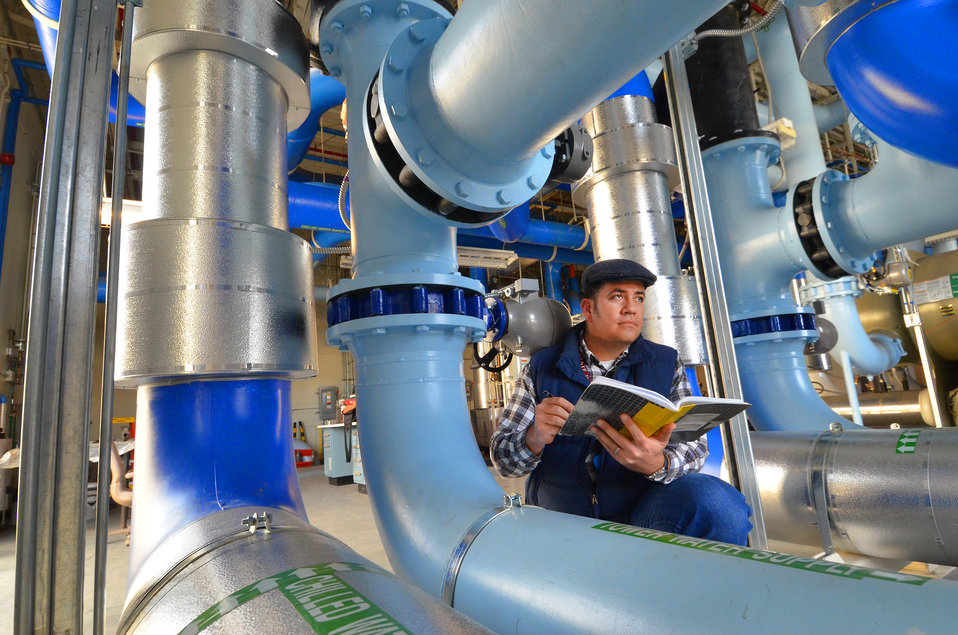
Sandia mechanical operations engineer checks out a heat exchange that's part of the labs' Free-Cooling System.

Free cooling has helped Sandia cut energy usage by more than 250 billion BTUs the past six years and reduce greenhouse gas emissions.